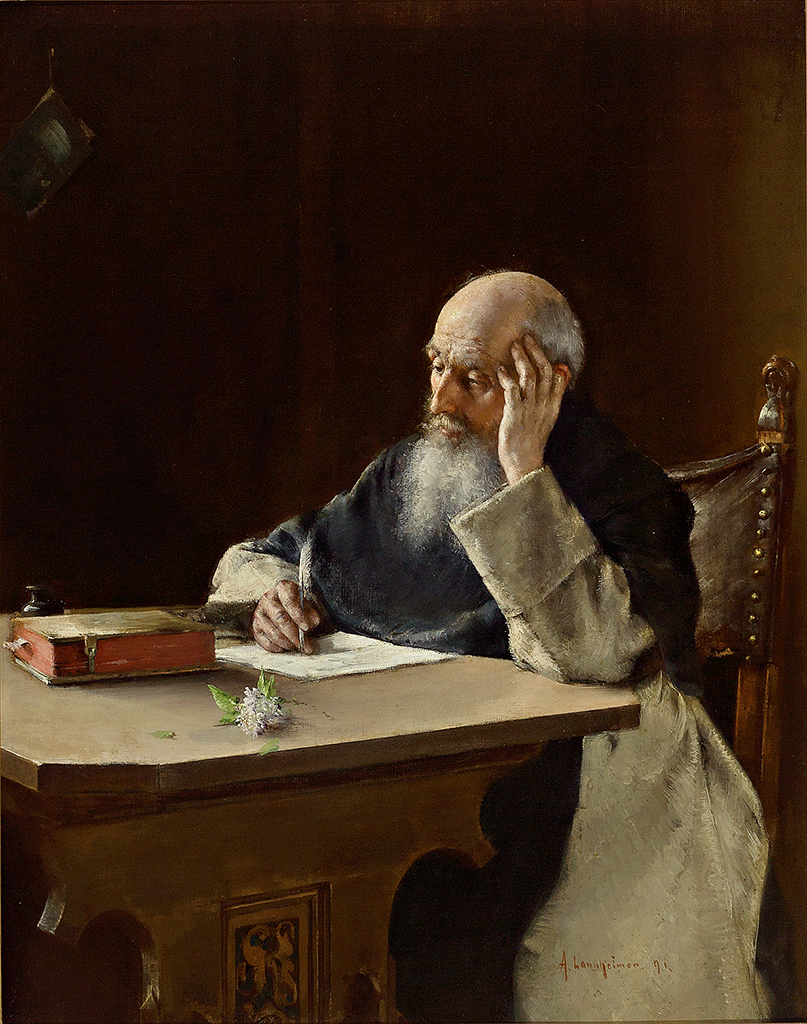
Portrait eines schreibenden Mönches in seiner Klause, Öl/Lwd. 57 x 45 cm